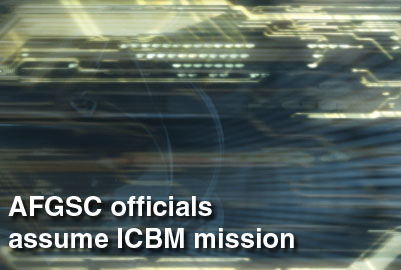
Air Force Global Strike Command officials assume ICBM mission

Air Force Global Strike Command officials at Barksdale Air Force Base, La., assumed the Air Force's intercontinental ballistic missile mission Dec. 1. The ICBM transfer is part of a phased approach to unify all Air Force nuclear-capable assets under one command.